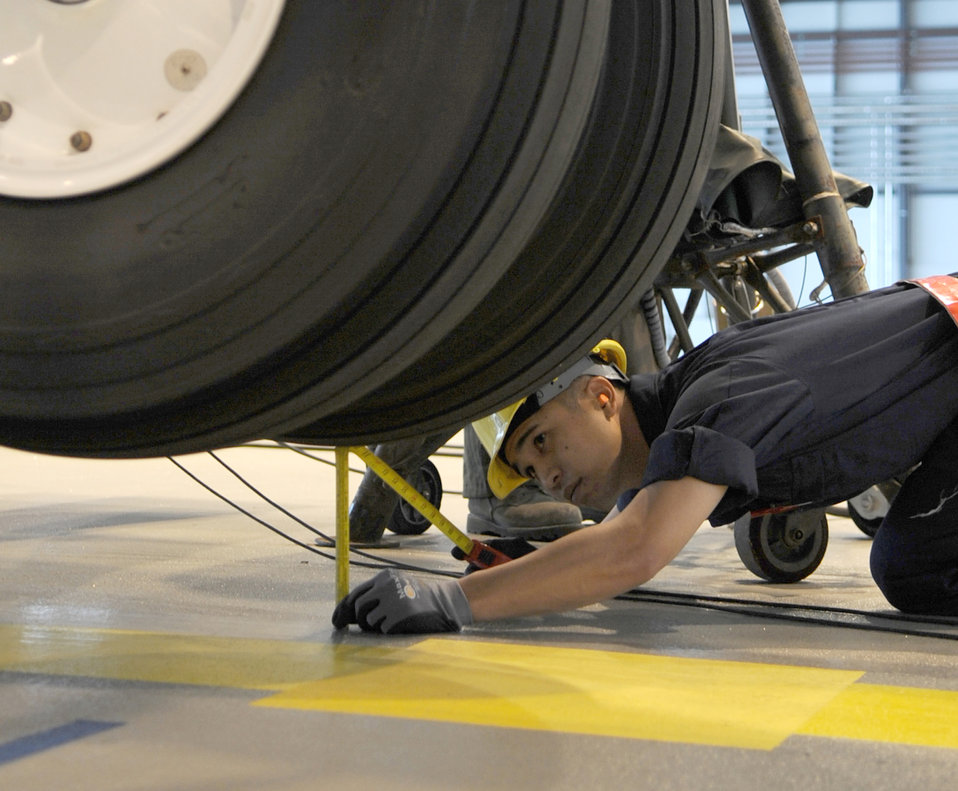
1st Isochronal Inspection

Airman 1st Class Joel Rivera measures the height of the C-130J Super Hercules off the ground during an isochronal inspection May 26, 2010, at Ramstein Air Base, Germany. This is the first C-130J all active-duty isochronal inspection done in the Air Force. Airman Rivera is the 86th Maintenance Squadron isochronal crew chief.